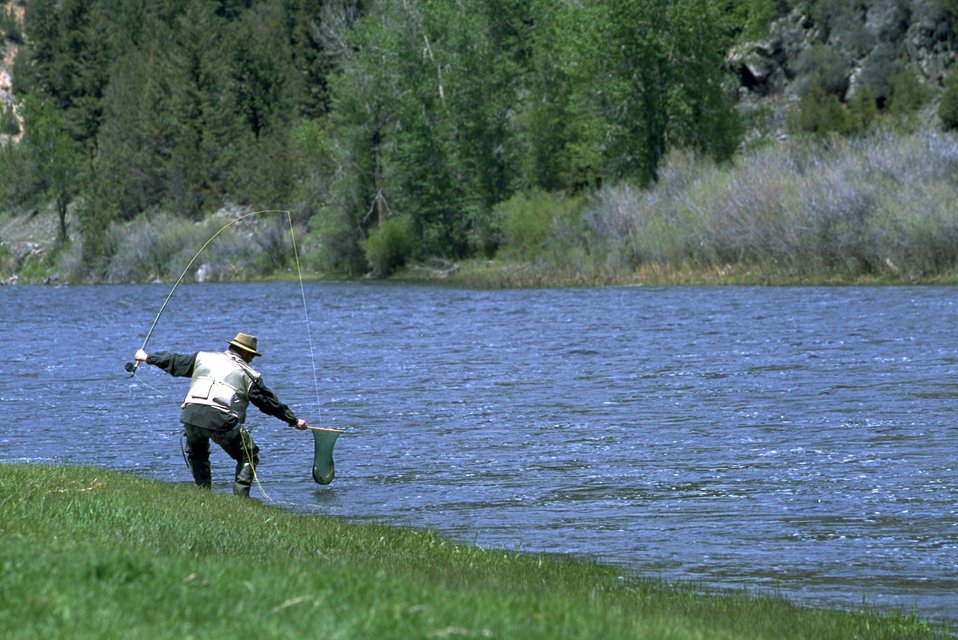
Caught one! Fishing on the Big Hole River